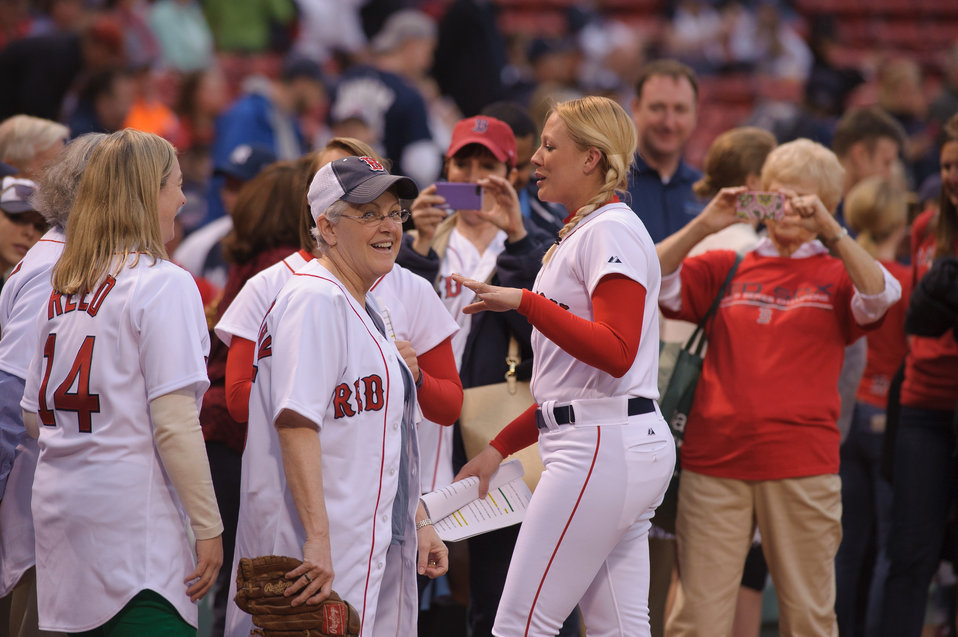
A Day In The Life of the EPA Administrator - April 22, 2014 6:47 pm

Taking in the huge crowd on hand for the Red Sox vs Yankees game, Administrator McCarthy prepares for her first pitch in recognition of Earth Day.